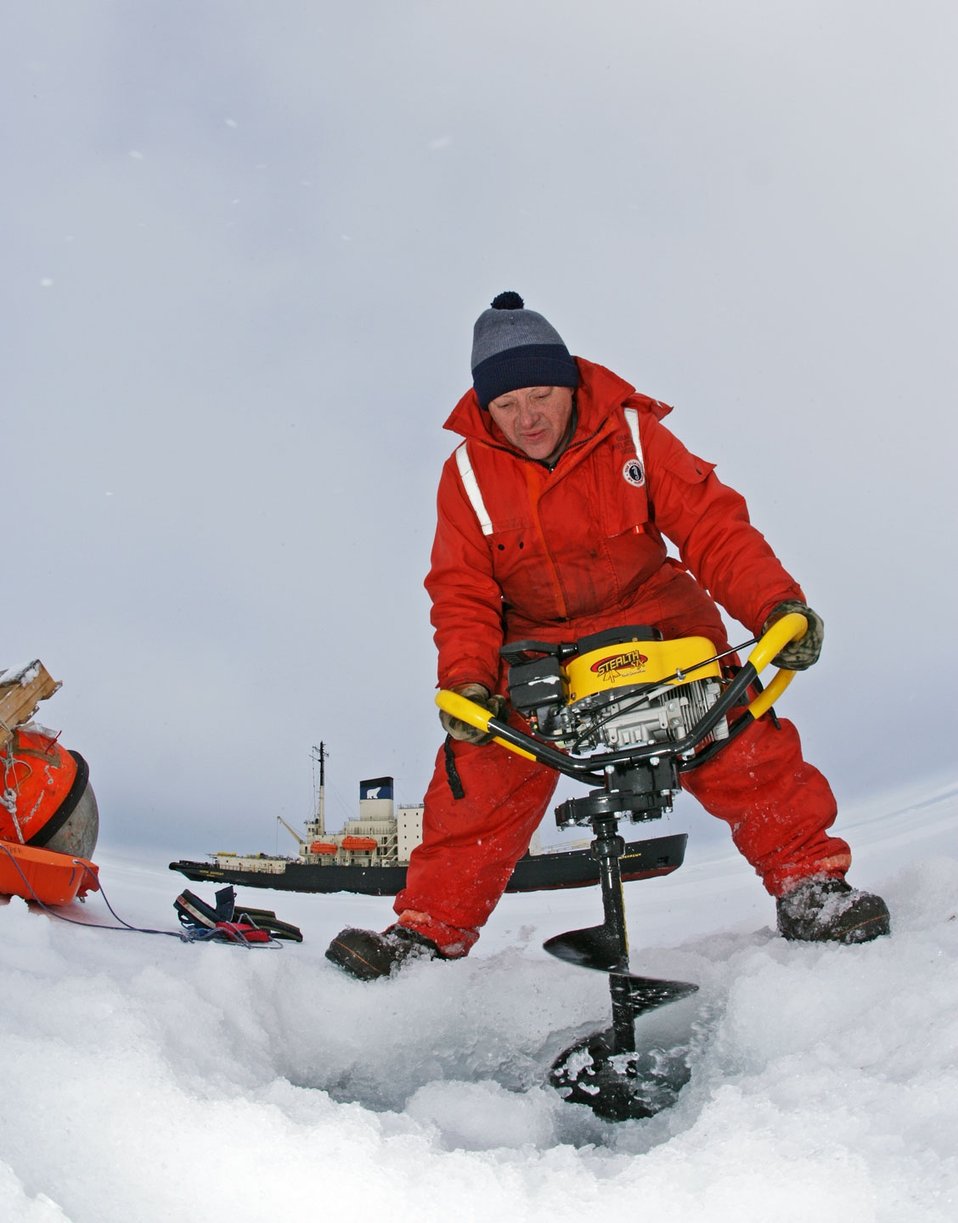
Drilling through the ice to obtain ice cores. The ice at this location was about 1.1 meters thick.